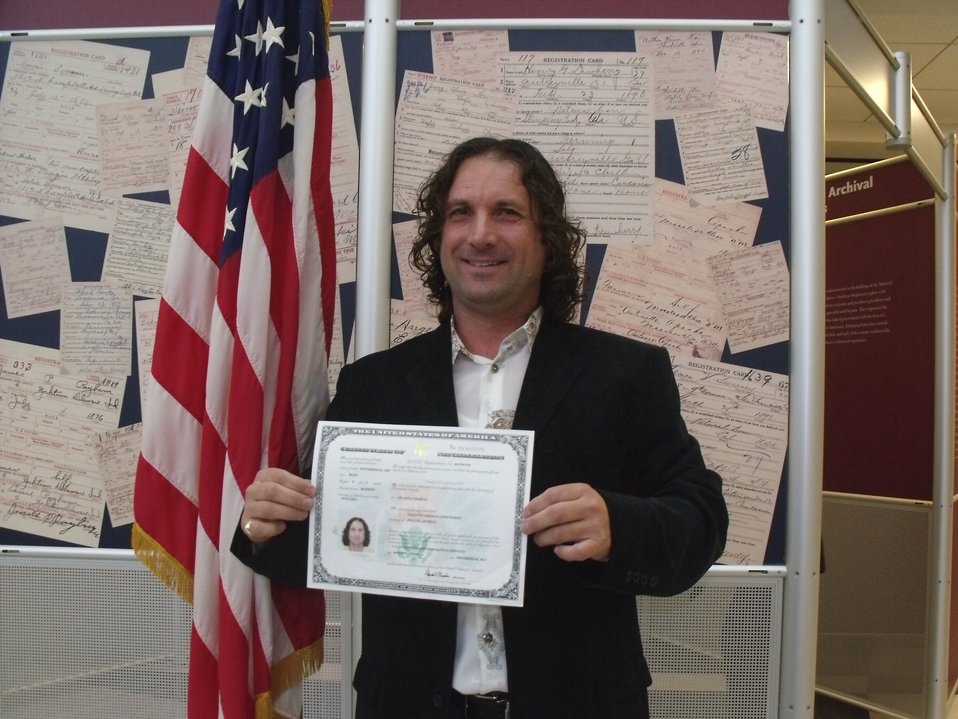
New Citizens